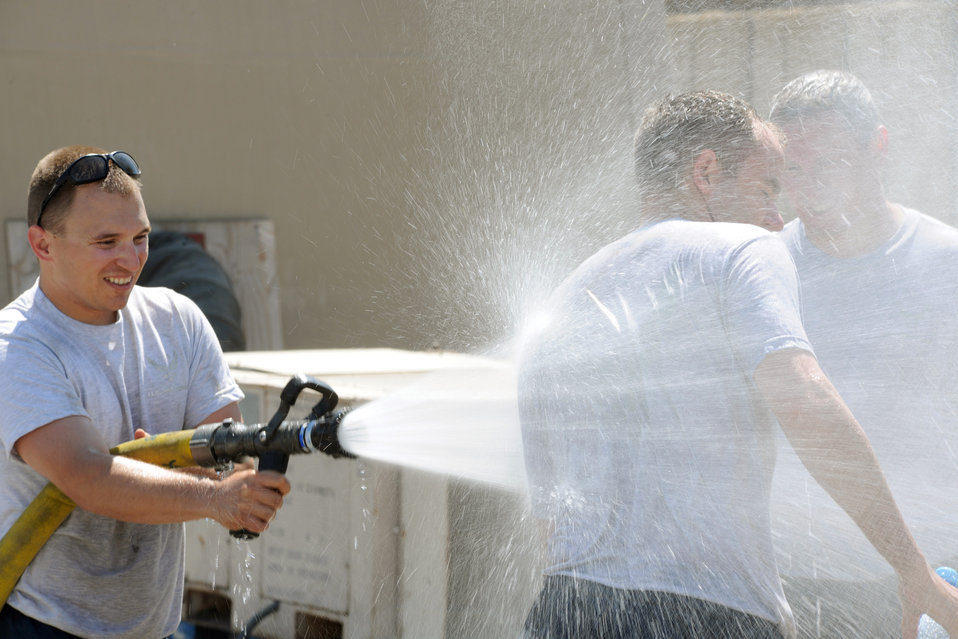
Kyrgystan 5K Mud Run

First Lt. Christian Des Champs hoses off Capt. Carl McBurnett at the finish line following the 5K mud run at the Transit Center at Manas, Kyrgyzstan, July 11, 2010. The run helped raise money for the Manas Area Benefit Outreach Society; a volunteer organization used to better the lives in the local community.